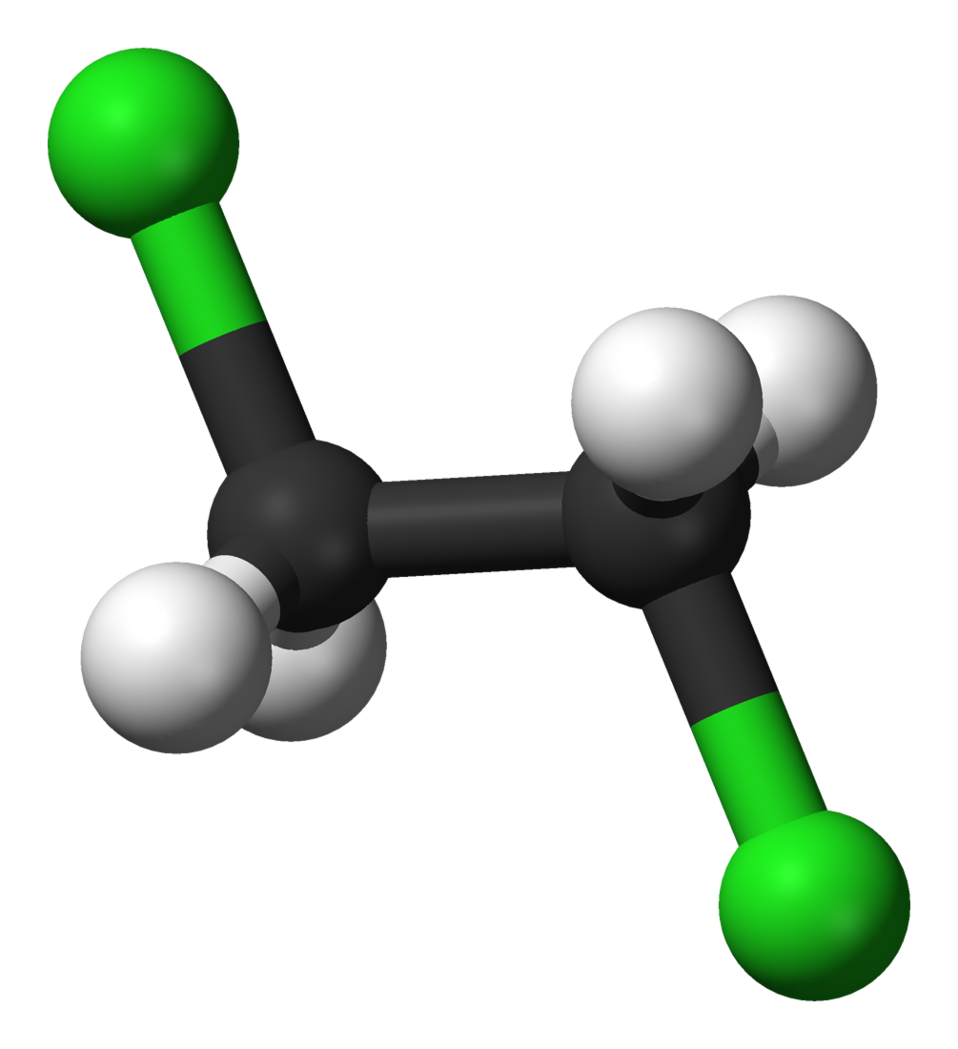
1,2-dichloroethane-anti-side-3D-balls